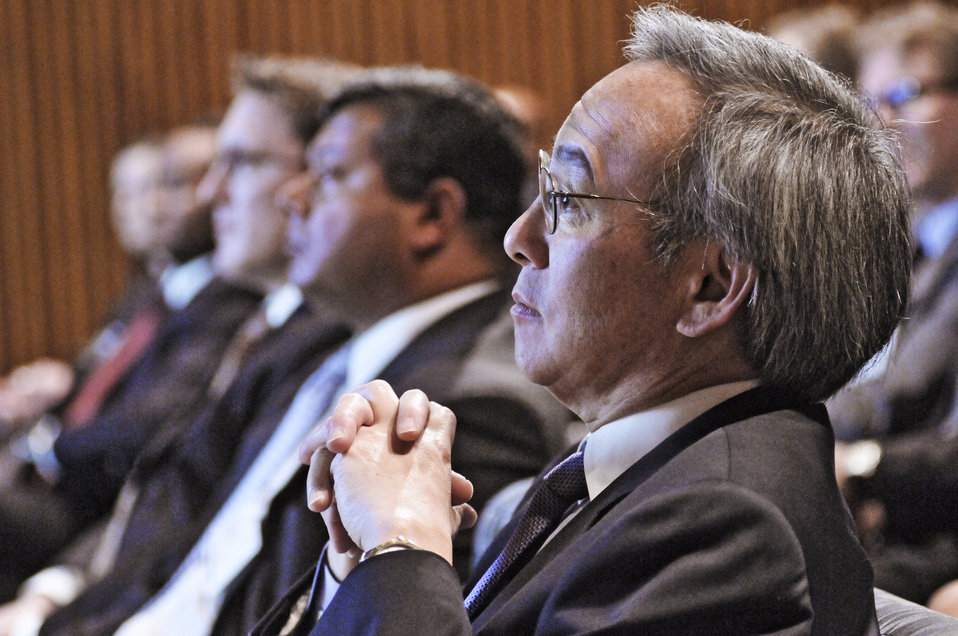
Energy Secretary Steven Chu looks on as Dr. Steve Koonin presents the results for the Quadrennial Technology Review.